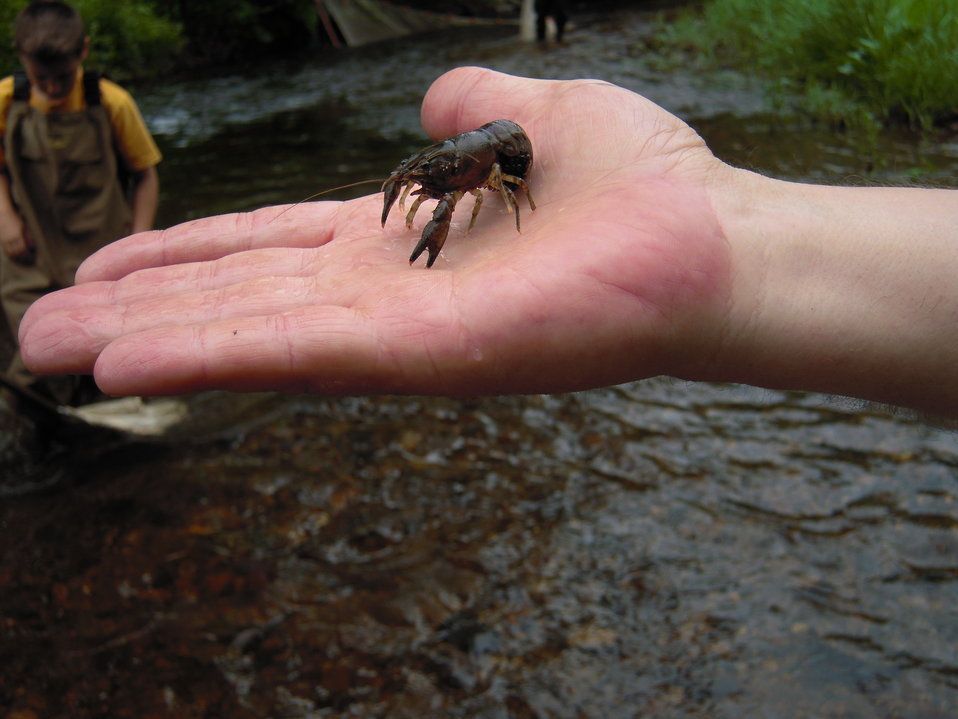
Crayfish